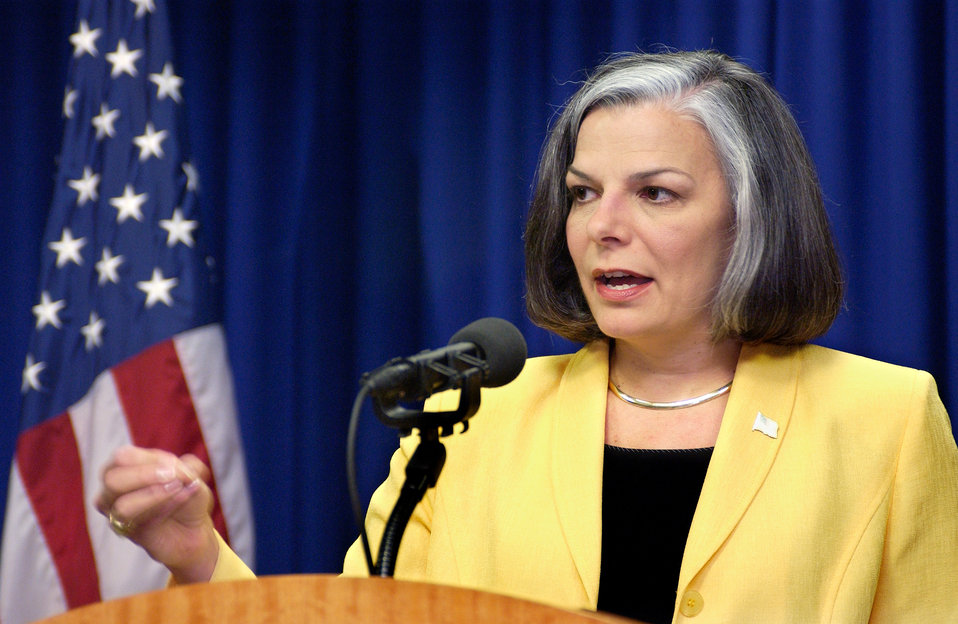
This was the former Director of the CDC (2002 - 2008), Julie Gerberding, MD, MPH, addressing reporters at a news conference on September 18, 2003.